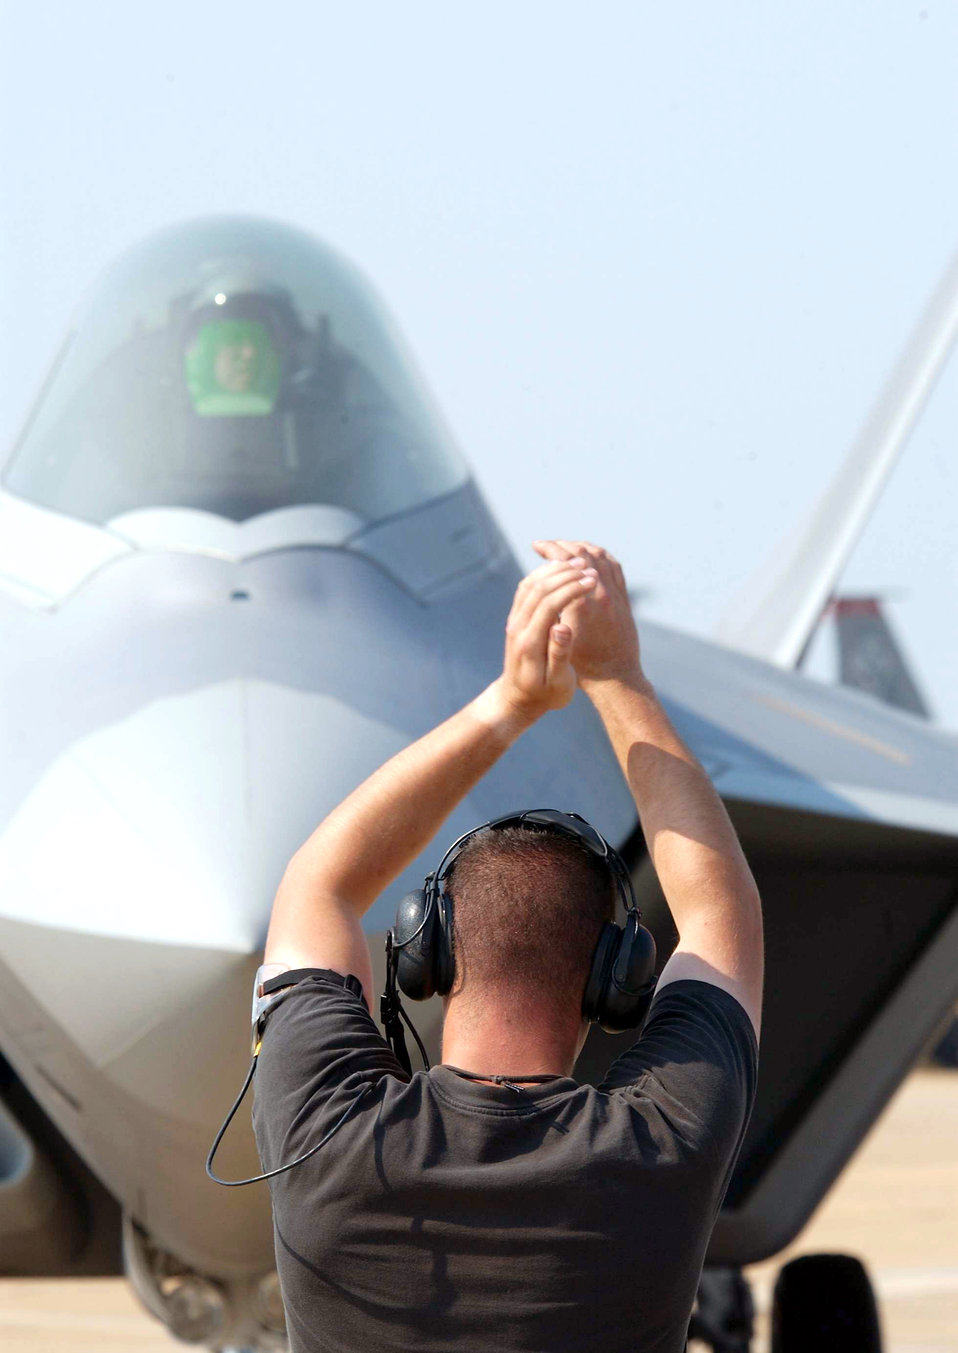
Raptor practice

LANGLEY AIR FORCE BASE, Va. -- Senior Airman Rick Alexander marshals in Col. James Hecker after returning from a simulated F/A-22 Raptor combat sortie during an exercise here. The exercise evaluated the 1st Fighter Wing's ability to prepare and deploy people, equipment and support assets to a combat environment. Colonel Hecker is the 27th Fighter Squadron commander.